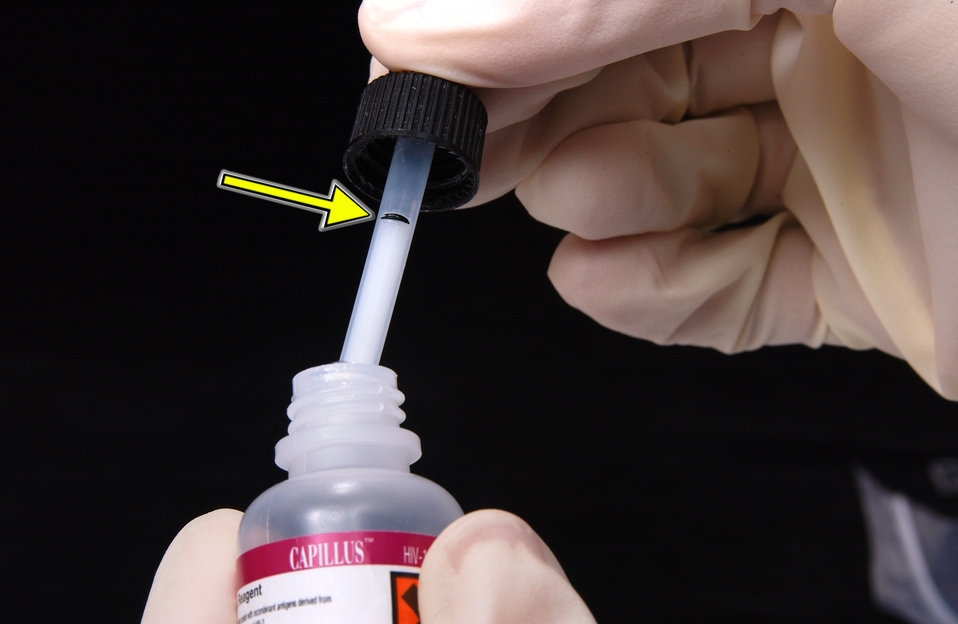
Draw the CAPILLUS� HIV-1/HIV-2 Rapid Test latex reagent into the dropper up to its calibration mark. (Step 5 of 12)